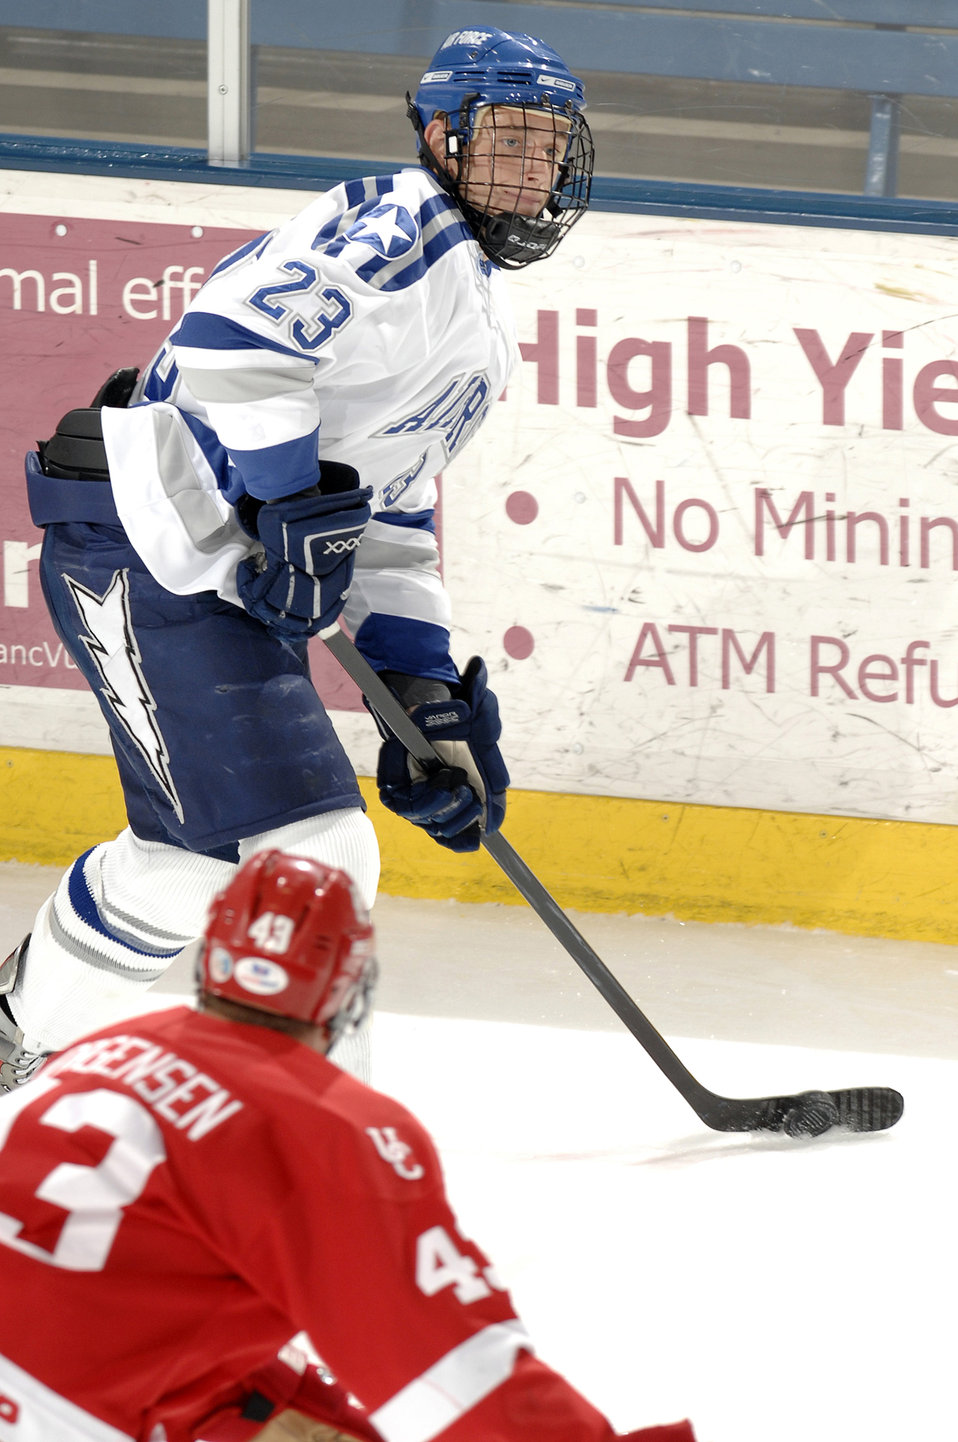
Lamoureux scores two in 3-1 win over Calgary

U.S. Air Force Academy CO -- Sophomore defender Scott Mathis moves the puck down the ice as Calgary forward Reid Jorgensen moves to cover him during the Falcons-Dinos exhibition match at the Cadet Ice Arena Oct. 5. Air Force won the match 3-1 on two goals by senior forward Jacquees Lamoureux. Mathis is a native of Crystal Lake, Ill.